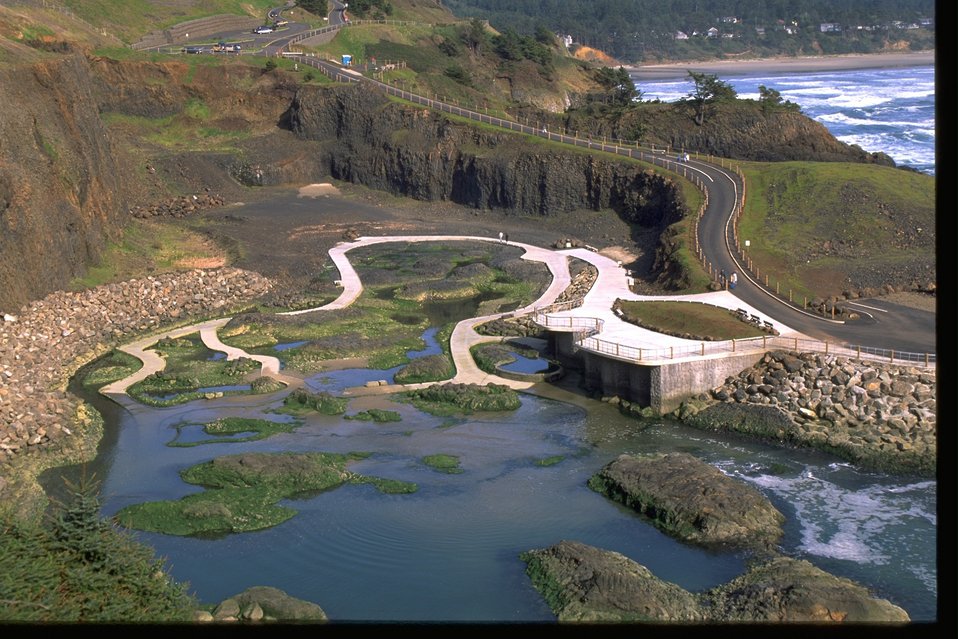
Programs at Yaquina Head Outstanding National Area accessible tidepools.